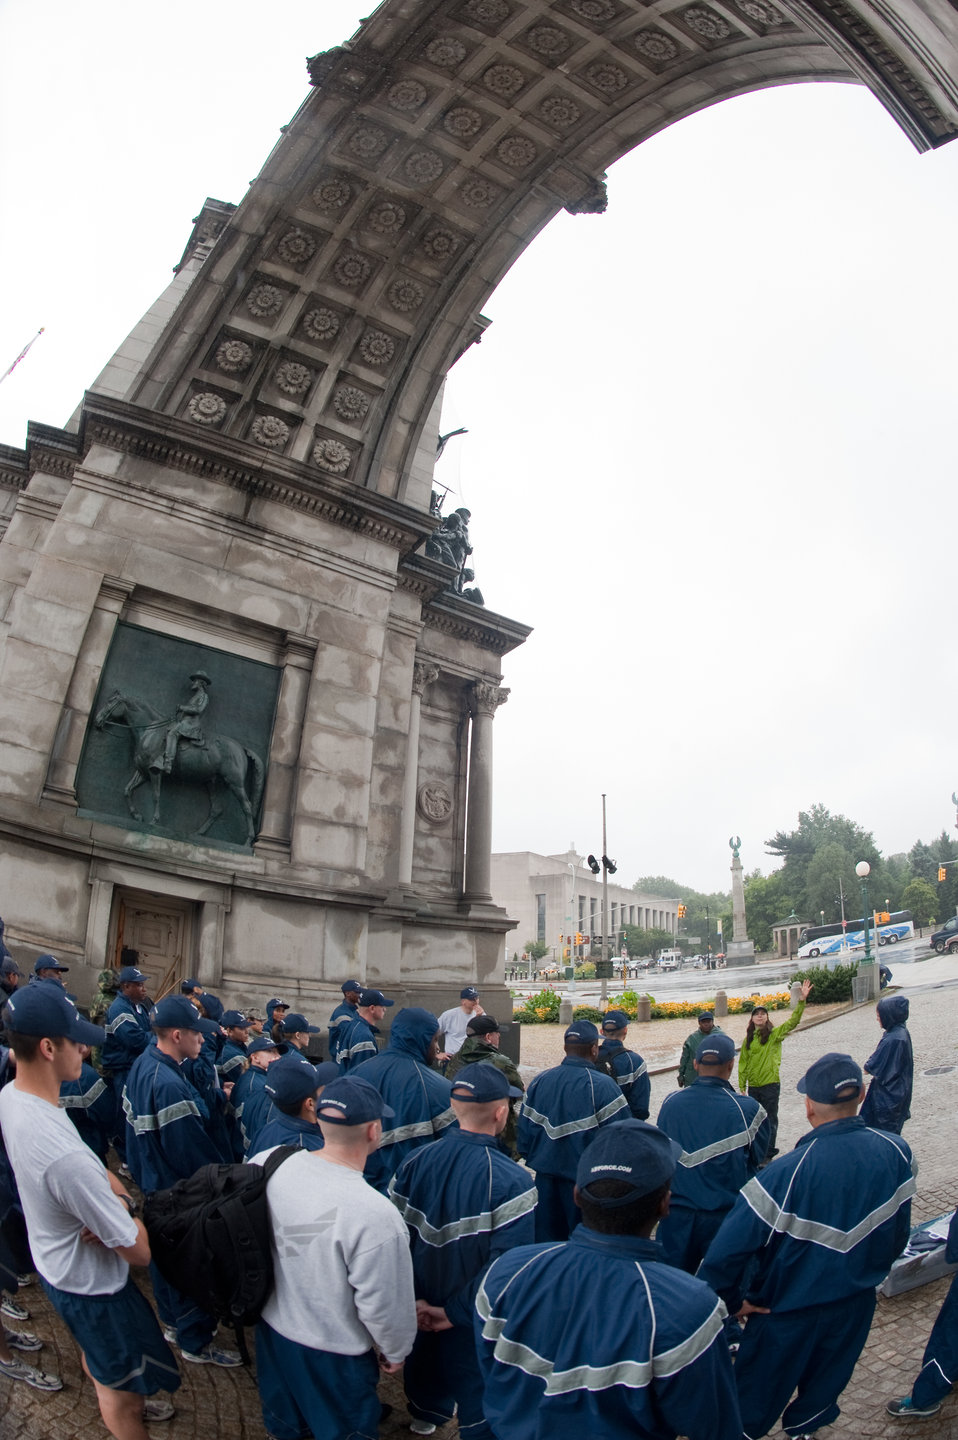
Air Force Week - Volunteer Day

Jessica Jamhoury points up at the Soldiers and Saliors Memorial Arch as speaks about the Grand Army Plaza in Prospect Park during a briefing for the 34 Airmen who participated in the cleanup of the plaza as part of Air Force Week New York's Volunteer Day Aug. 25, 2010, in Brooklyn, N.Y. Ms. Jamhoury is a project coordinator with Prospect Park Alliance, the organization that maintains this New York City park.